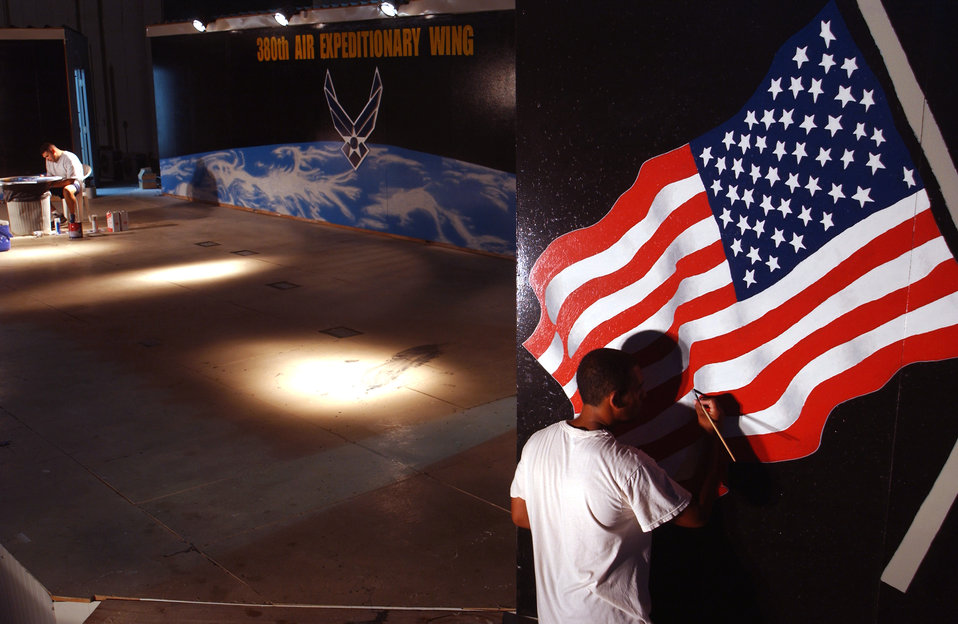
Painting the stage

Master Sgt. Ray Naranjo and Senior Airman Osvaldo Ros-Henriquez put final touches on the design of a stage for the 380th Expeditionary Wing at a forward-operating base in Southwest Asia Sept. 7. Both Airmen were part of a group who won a design contest after the stage was built. The work, which includes plywood shields of the wing and U.S. Central Command Air Forces crest, took about three weeks to complete. Sergeant Navanjo and Airman Ros-Henriquez are assigned to the 380th Expeditionary Civil Engineer Squadron.